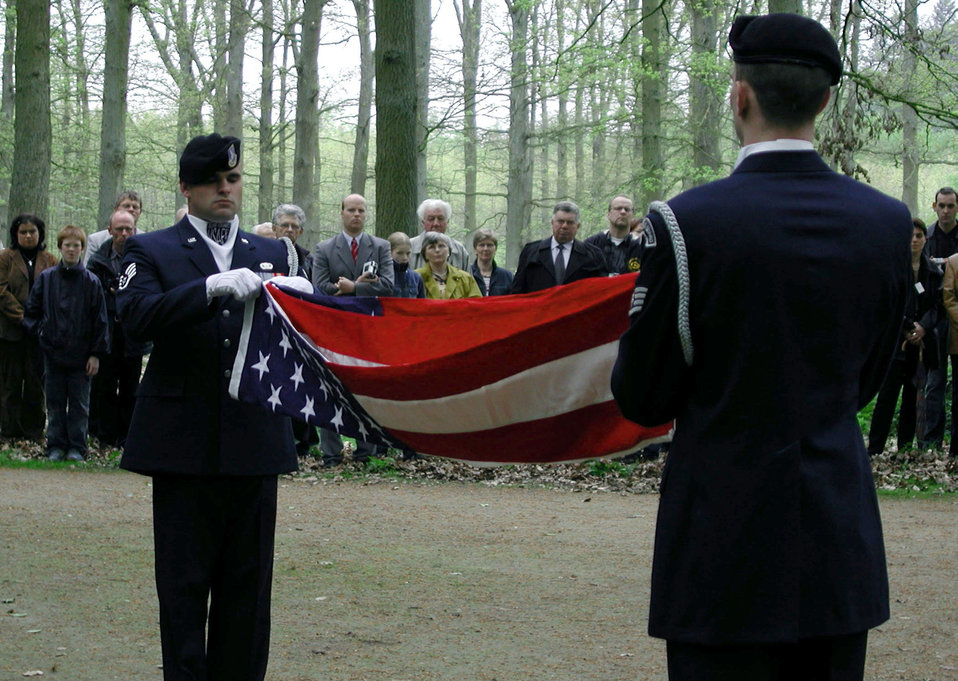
Paying tribute

DINKLAGE, Germany -- Staff Sgts. Kyle Luker and Christopher Murphy fold an American flag during a memorial dedication ceremony here April 29. The flag was presented to Army veteran Robert Franke. His brother, along with his aircrew, was killed when their B-24 Liberator bomber was shot down by German fighter aircraft and crashed here during World War II. The Airmen are assigned to the 568th Security Forces Squadron's elite guard flight honor guard at Ramstein Air Base, Germany.